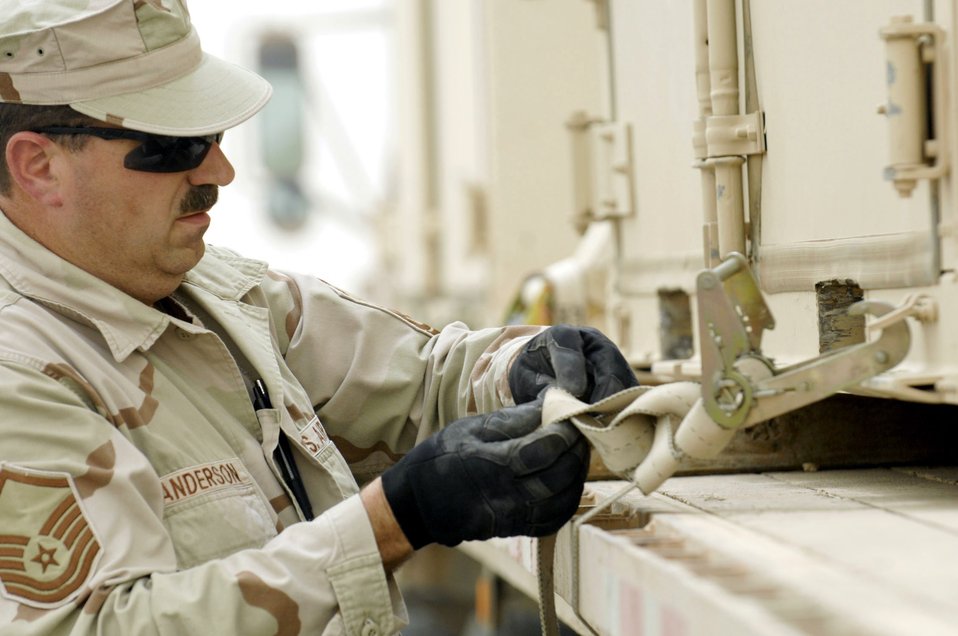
Fully armed

Master Sgt. Steven Anderson secures a container full of M-16s to a trailer during a base-wide arming exercise June 14 at Ali Air Base, Iraq. Ali AB Airmen participated in the exercise to help fine-tune weapons distributing procedures in case of a real-world threat to the base. Sergeant Anderson is assigned to the 407th Expeditionary Logistics Readiness Squadron.